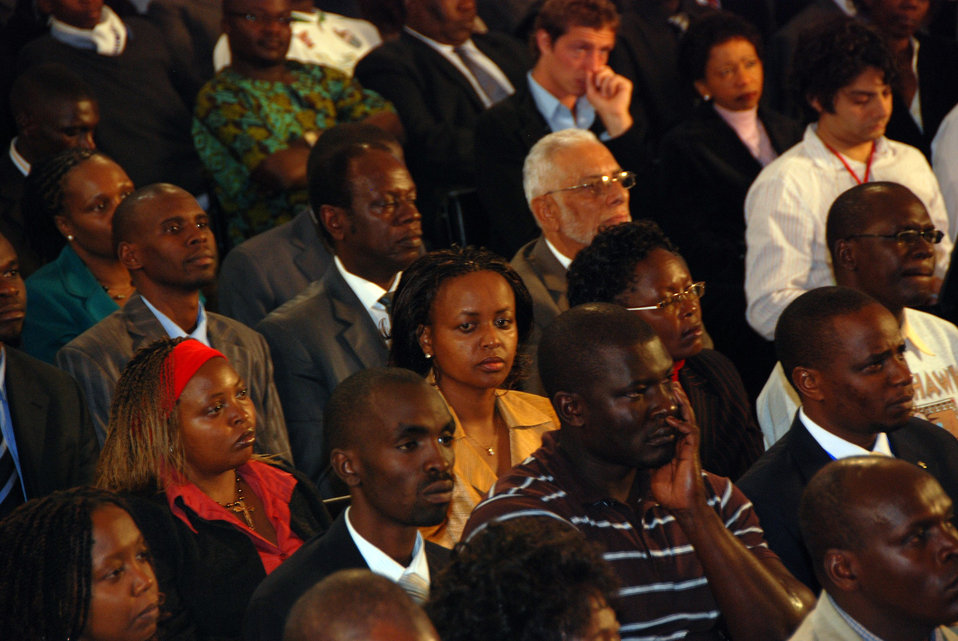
Secretary Clinton Participates in Town Hall Meeting

The audience listens during a town hall meeting featuring U.S. Secretary of State Hillary Rodham Clinton at the University of Nairobi in Nairobi, Kenya August 6, 2009.